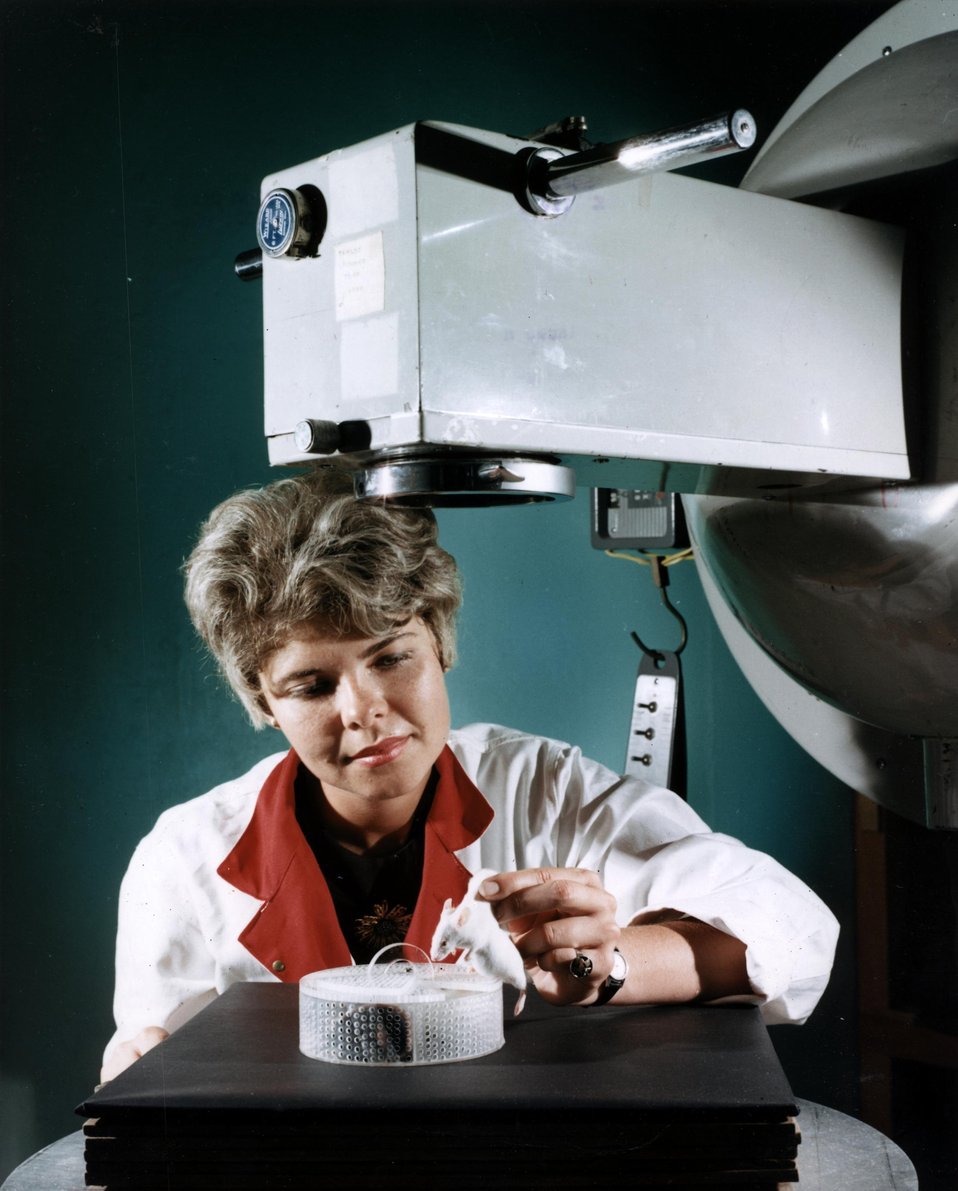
A technician places a mouse in a chamber preparatory to x-irradiation. Part of the x-ray machine is also shown. These studies concern the acceleration of aging which occurs in animals as a result of a dose of radiation. c. 1966